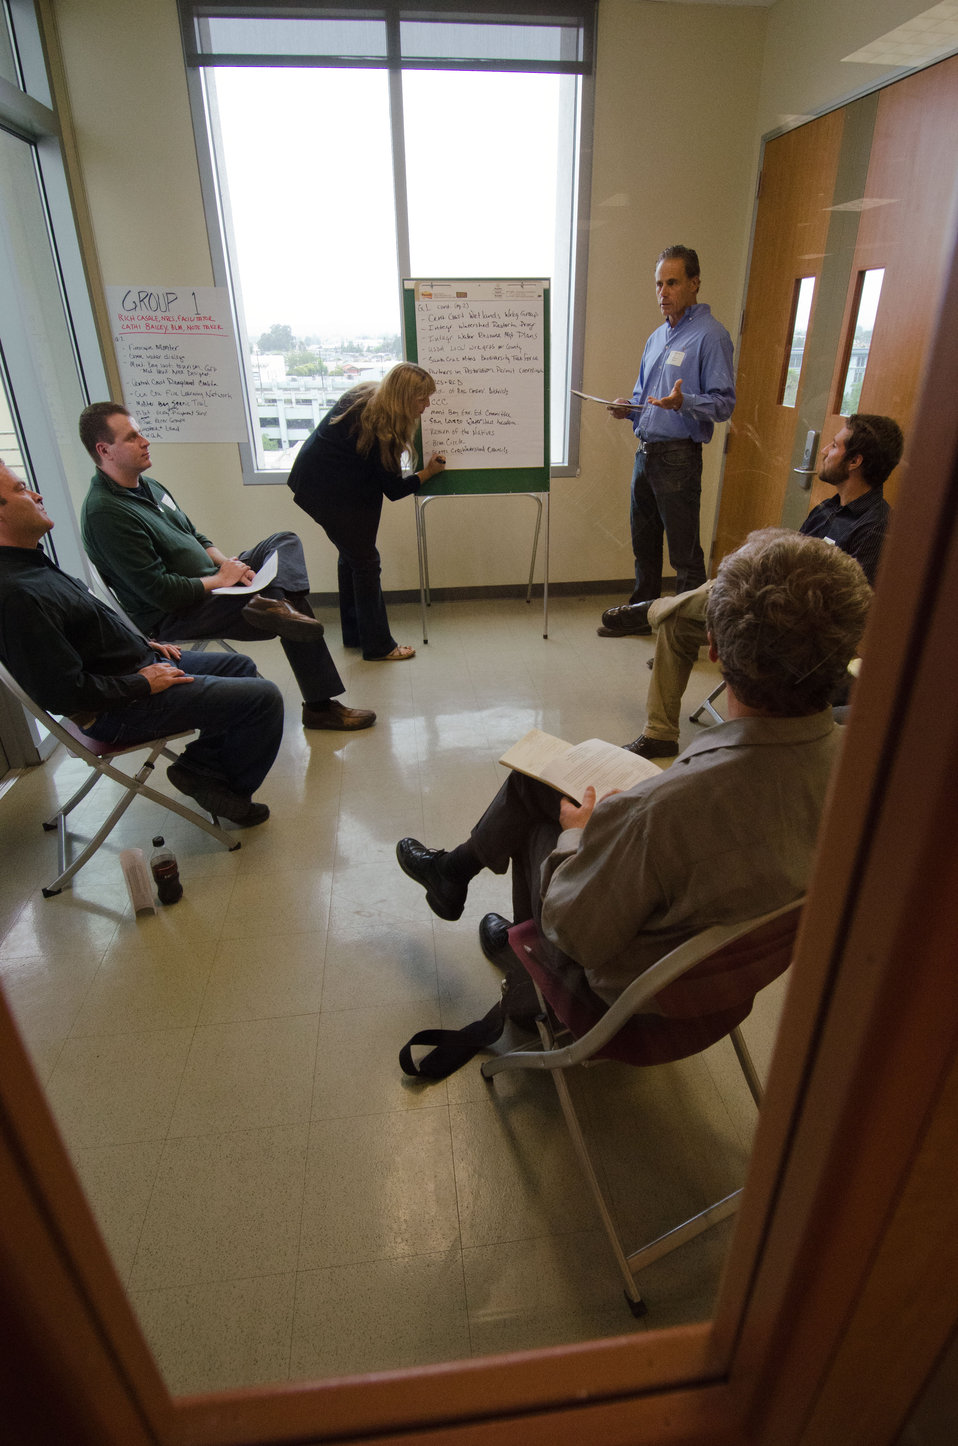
U.S. Department of Agriculture Natural Resources Conservation Service Conservationist (Santa Cruz County) Rich Casale facilitated and Bureau of Land Management's Cathi Bailey took notes for the Group #1 breakout session during the America’s Great Outdoors Initiative (AGO) Monterey Bay Pilot Area Focus Session in the City of Watsonville’s Civic Plaza in California, on Friday, June 17, 2011.